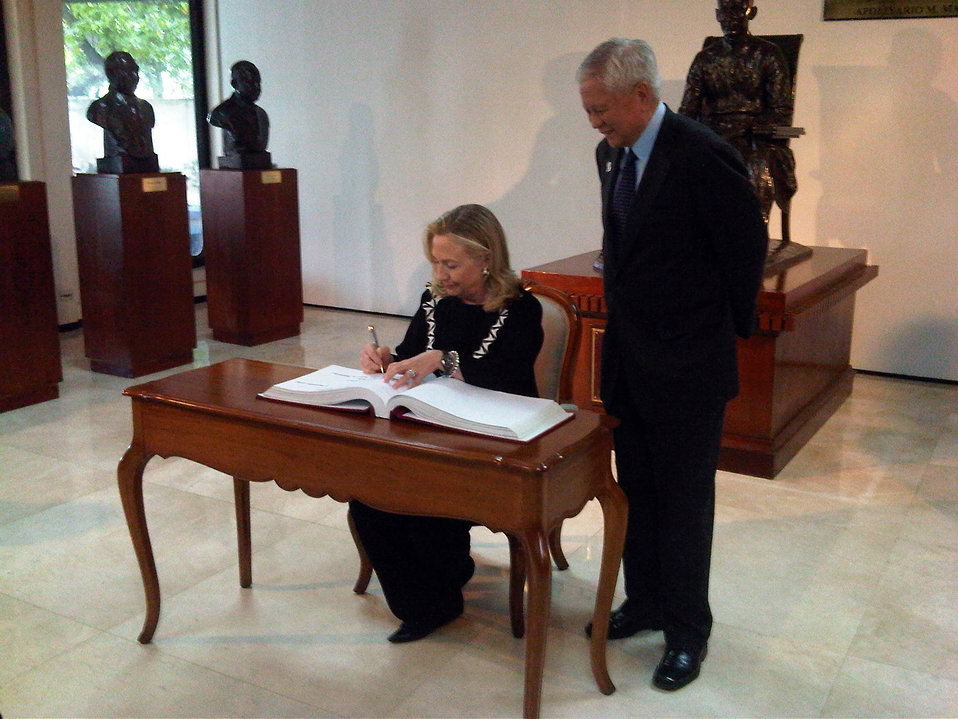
Secretary Clinton Signs Guestbook at Philippines Department of Foreign Affairs

U.S. Secretary of State Hillary Rodham Clinton signs the guestbook, as Philippines Foreign Secretary Albert del Rosario looks on, at the Department of Foreign Affairs in Manila, the Philippines November 16, 2011.